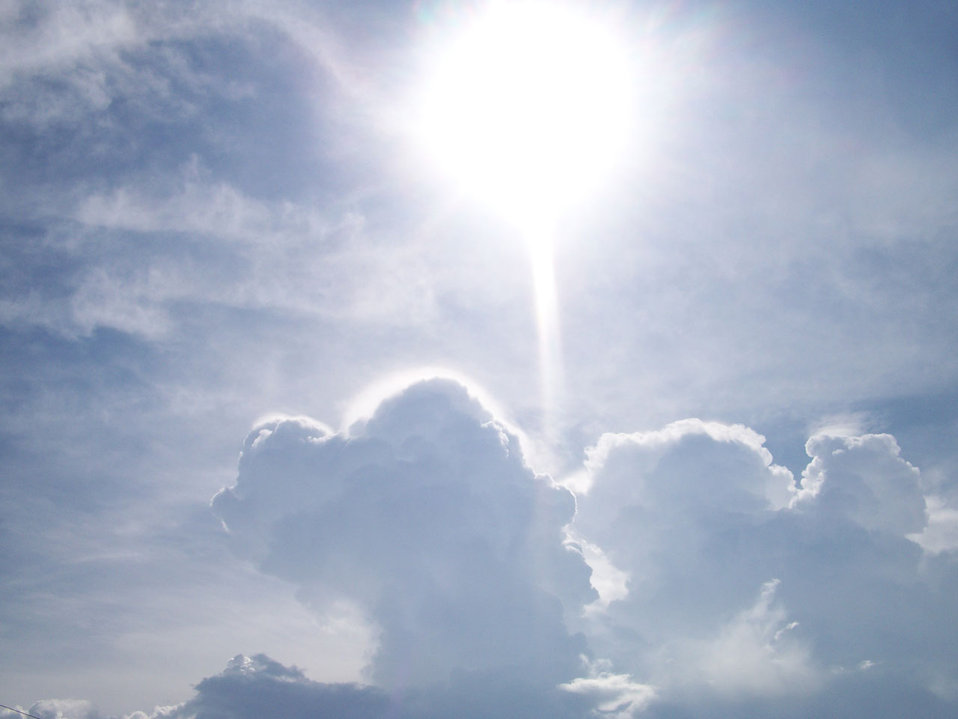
Sun and clouds

Sun illuminating the sky on a beautiful day with clouds..